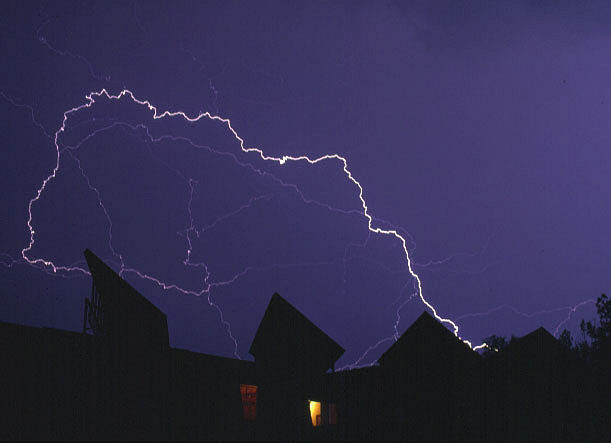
Lightning in night sky over Decatur, Georgia.